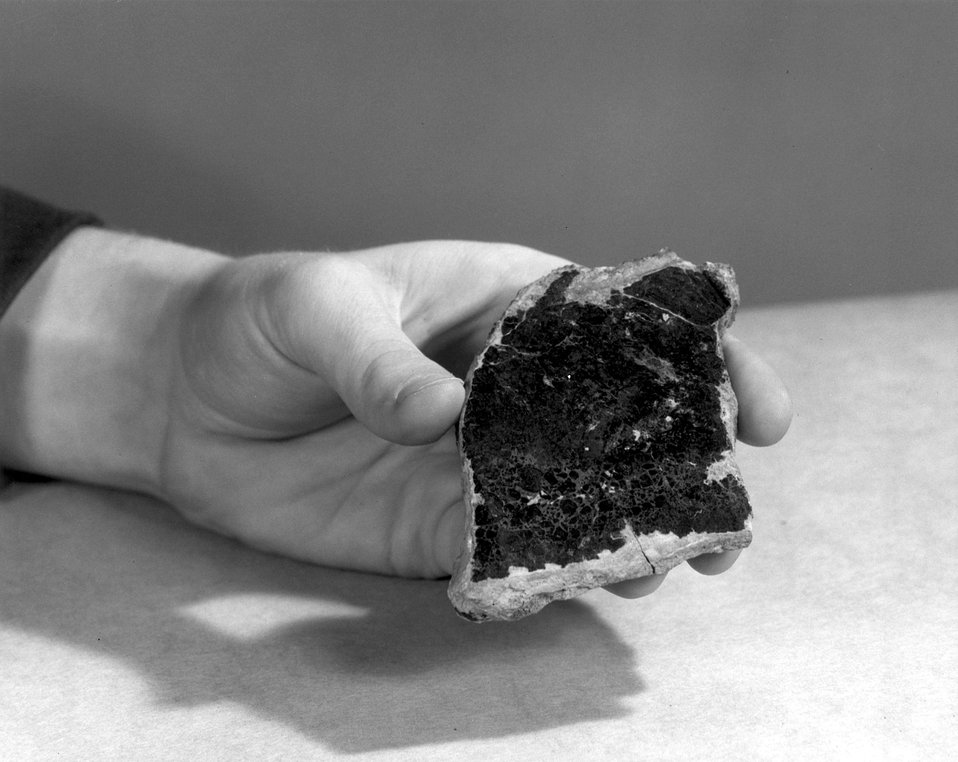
Uranium which is obtained by processing an oxide of uranium (U3 O8) which is typically found in varying concentrations in an ore called pitchblende, or granite. Shown here is a nearly pure specimen of pitchblende from Marshall Pass, Colorado. c. 1971